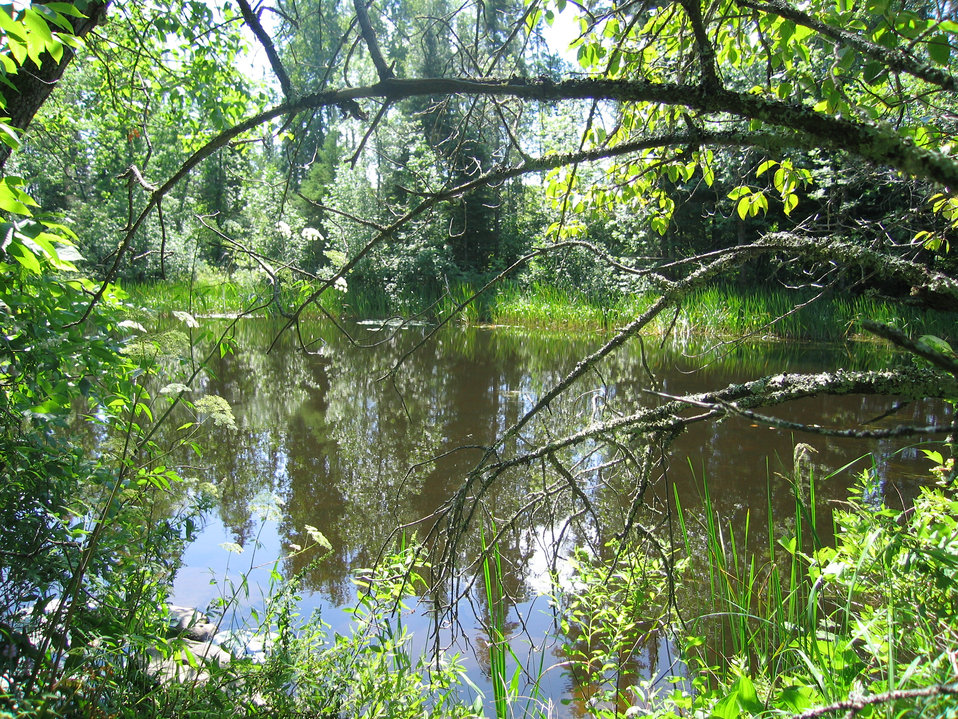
Ash River near the site of the Nova Detector Facility.

The lab will house a 15,000 ton particle detector that will investigate the role subatomic particles called neutrinos in the origin of the universe. The construction of the facility is supported under a cooperative agreement for research between DOE and the University of Minnesota. The construction will result in procurement for concrete, steel, road building materials and mechanical and electrical equipment from the U.S. firms. The NoVA project involves about 180 scientist and engineers from 28 institutions.